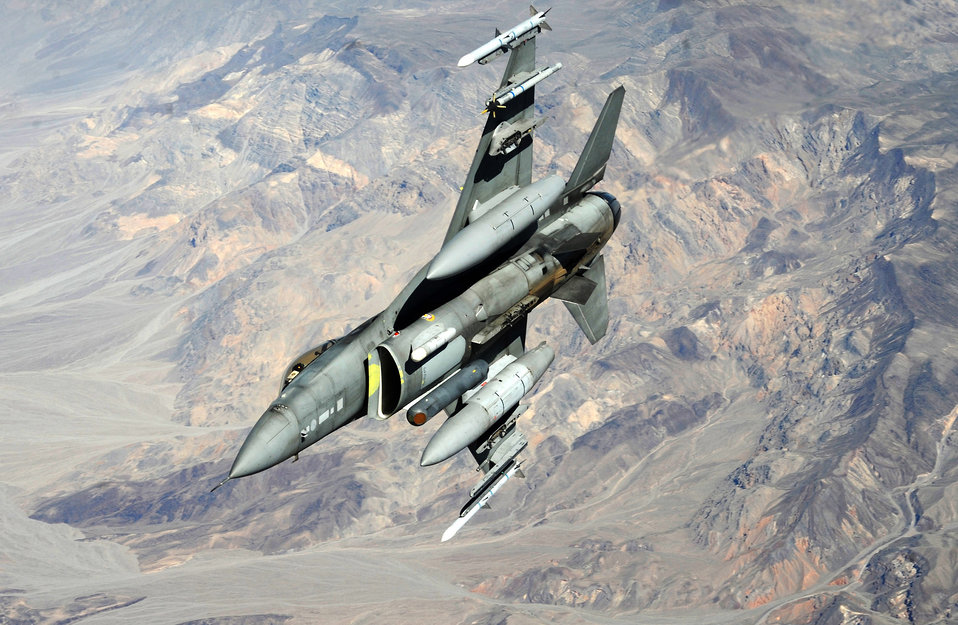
Bring it on!

An F-16 Fighting Falcon pilot from the 79th Fighter Squadron at Shaw Air Force Base, S.C., heads out to the fight April 28, 2011, during Green Flag West 11-6. Green Flag West provides a realistic close-air support training environment for Airmen and Soldiers preparing to deploy in support of combat operations.